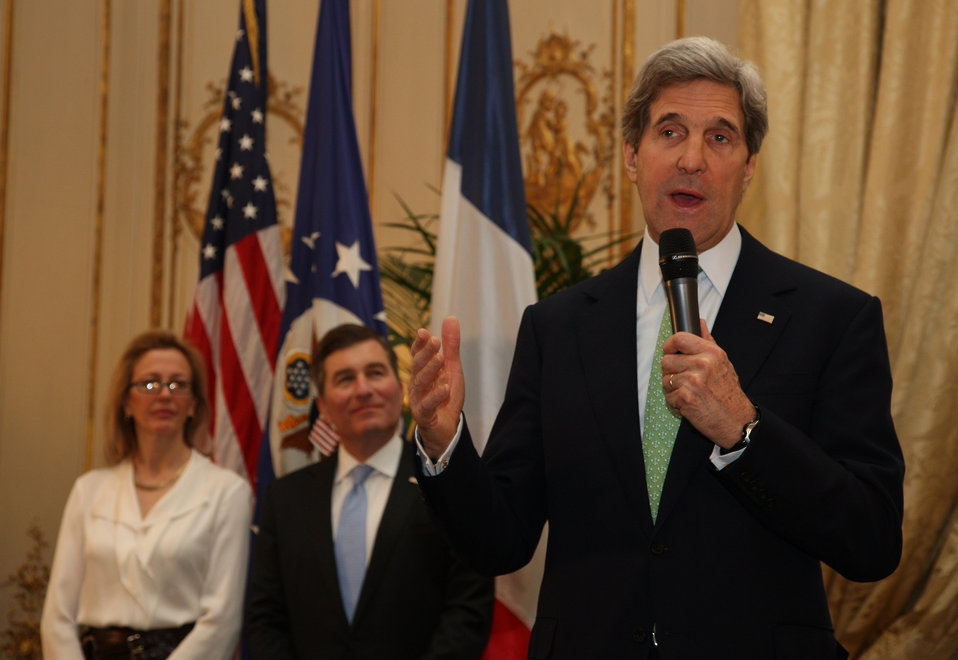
Secretary Kerry Addresses Tri-Mission Paris

U.S. Secretary of State John Kerry speaks to members of the Tri-Mission Paris staff in Paris, France, on February 27, 2013.